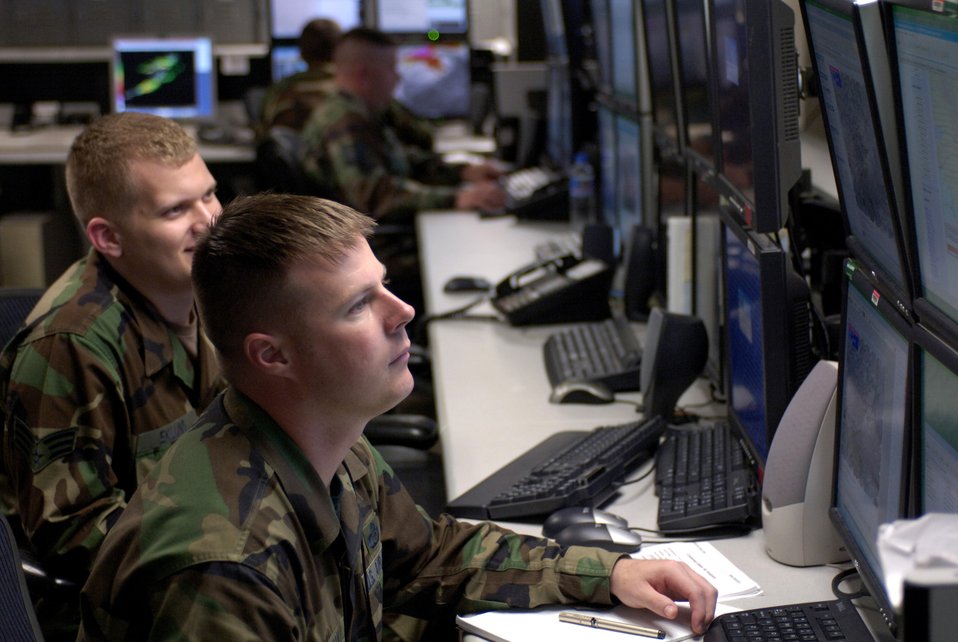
Weather squadrons complete merger

Master Sgt. Charles Hoffman and Senior Airman Christopher Eklund collaborate and discuss weather forecasts for Korea and Japan on the operations floor Tuesday, April 18, 2006, at Hickam Air Force Base, Hawaii. Sergeant Hoffman and Airman Eklund are with the 17th Operational Weather Squadron, which provides Pacific Air Forces with tailored operational forecasts.